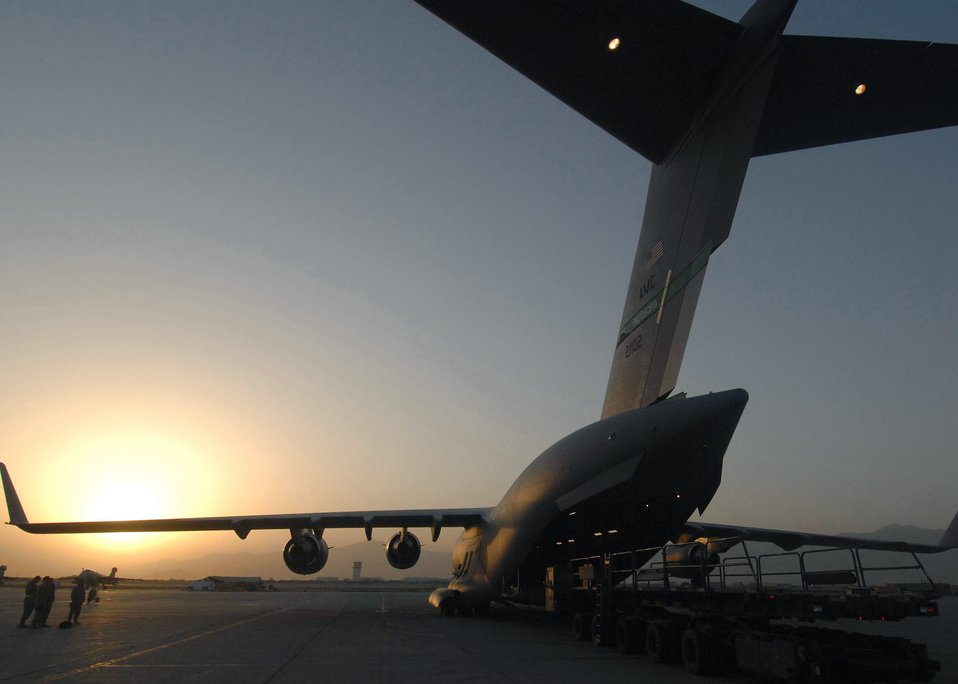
May 28 airpower summary: C-17s deliver goods

A C-17 Globemaster III is loaded, in preparation for airdrops in support of Operation Enduring Freedom. The C-17 plays a key role in the delivery of supplies to forward operating bases that prevent convoys from reaching safely.